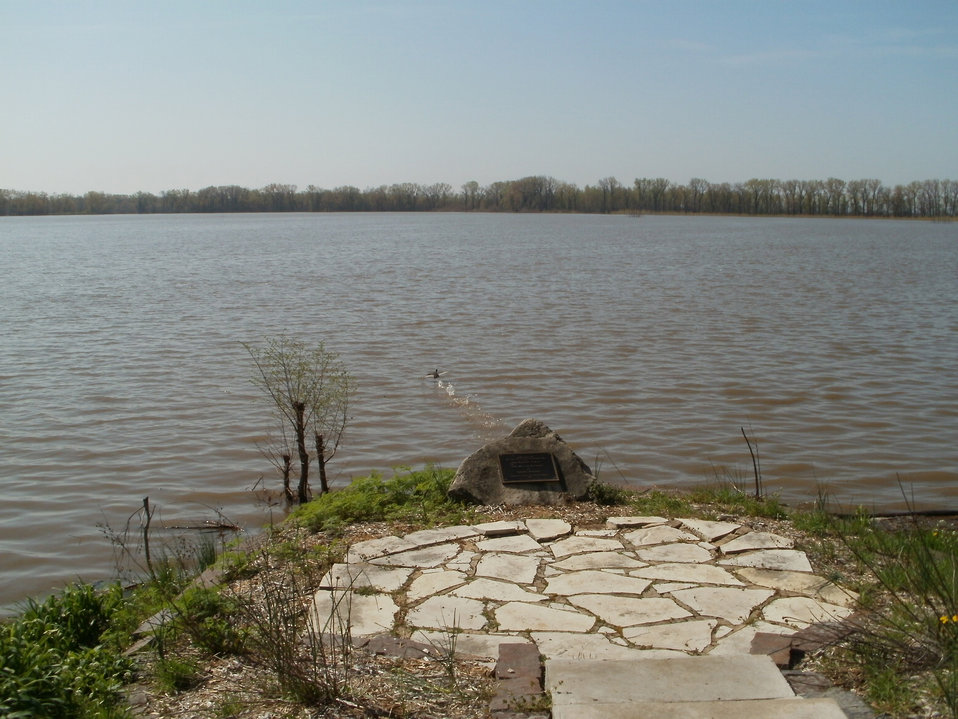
This Nature Conservancy owned farm lies South and East of County Highway 12 and is located in Section 7, 12 and 13 of Versailles Township in Brown County, IL. It has 972 acres enrolled in the Wetland Reserve Program (WRP). This is year 14 of a 30-year WRP easement purchased by the U.S. Department of Agriculture (USDA) Natural Resources Conservation Service (NRCS) and contains prairie plantings and tree planting, intended to help protect and restore the acreage to its natural state. Prior to enrollment in the WRP, this acreage was annually cropped from the edge of County Highway 12 down to the Illinois River bank. This is under water due to a break in the Camp Creek levee and the high waters of the Illinois River, which crested at this site on Apr. 27, 2013. USDA photo Randy Tankersley.